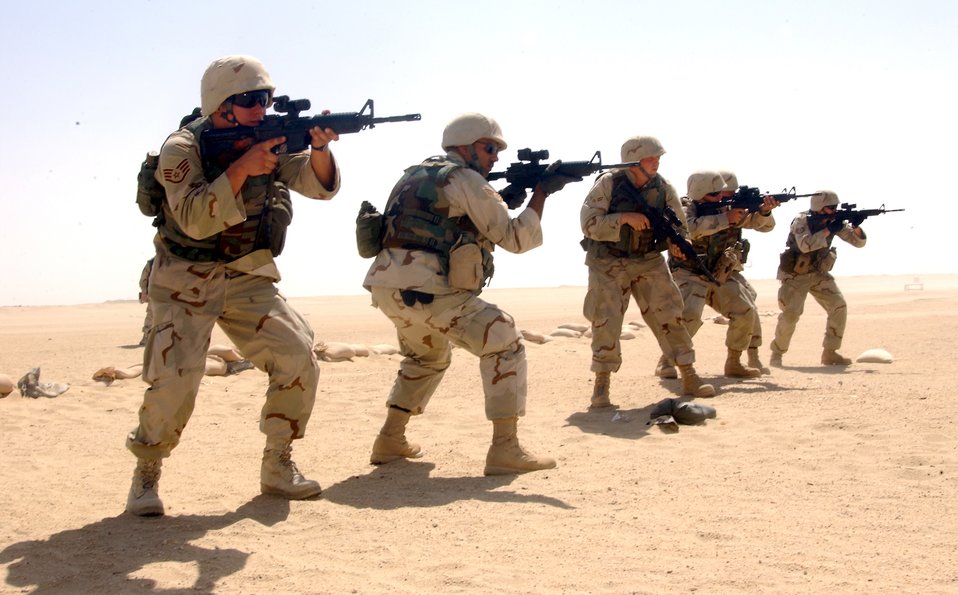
Close quarters

BALAD AIR BASE, Iraq -- Airmen fire their M-4 weapon systems during a close-quarters training march here July 15. The march is part of a training program that prepares Airmen to run convoy missions through Iraq.